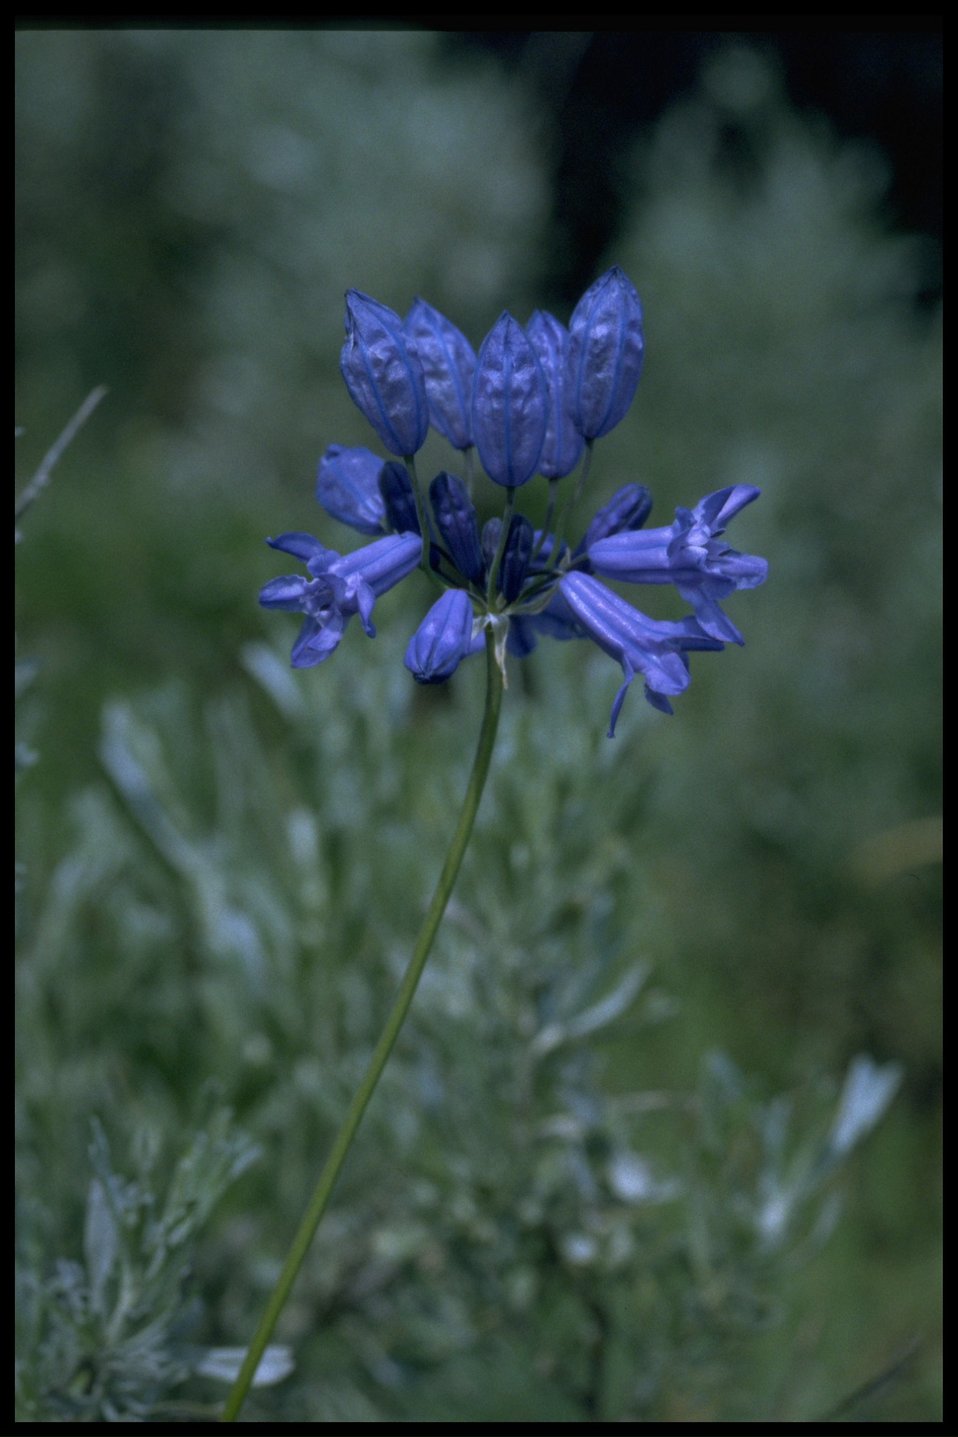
Closeup shot of Douglas' Brodiaea wildflower.